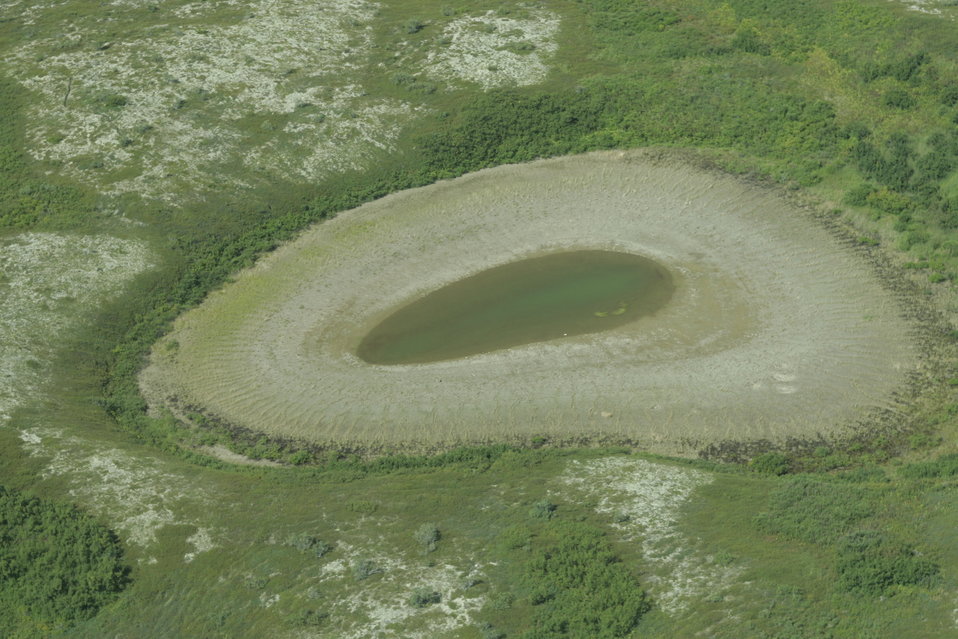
Togiak Nation Wildlife Refuge